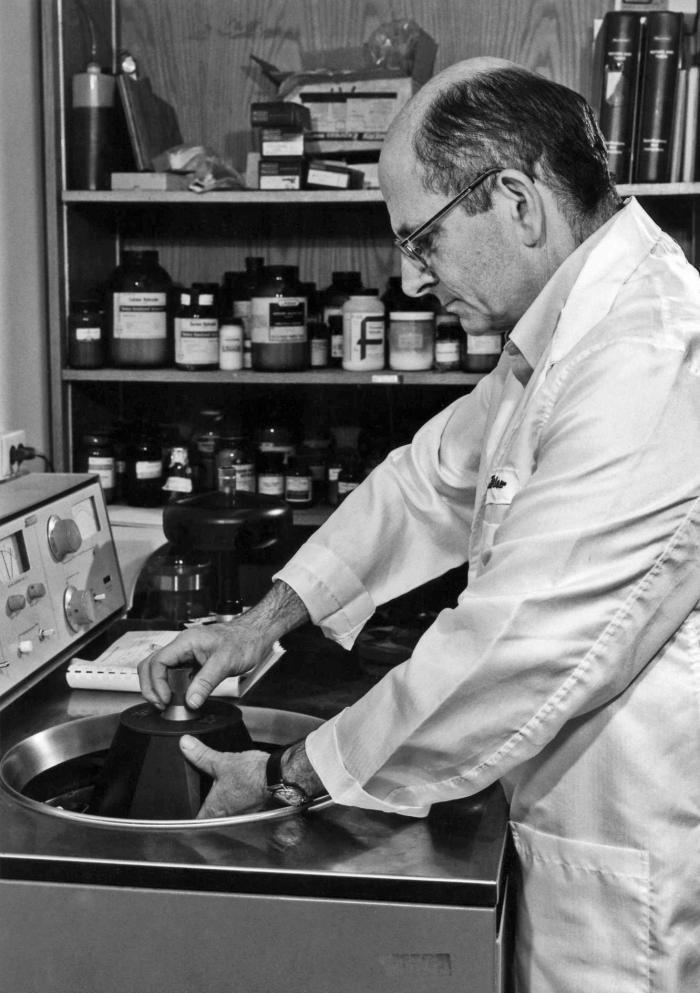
This Centers for Disease Control laboratorian in the Division of Viral and Rickettsial Diseases was shown here working with a laboratory centrifuge.